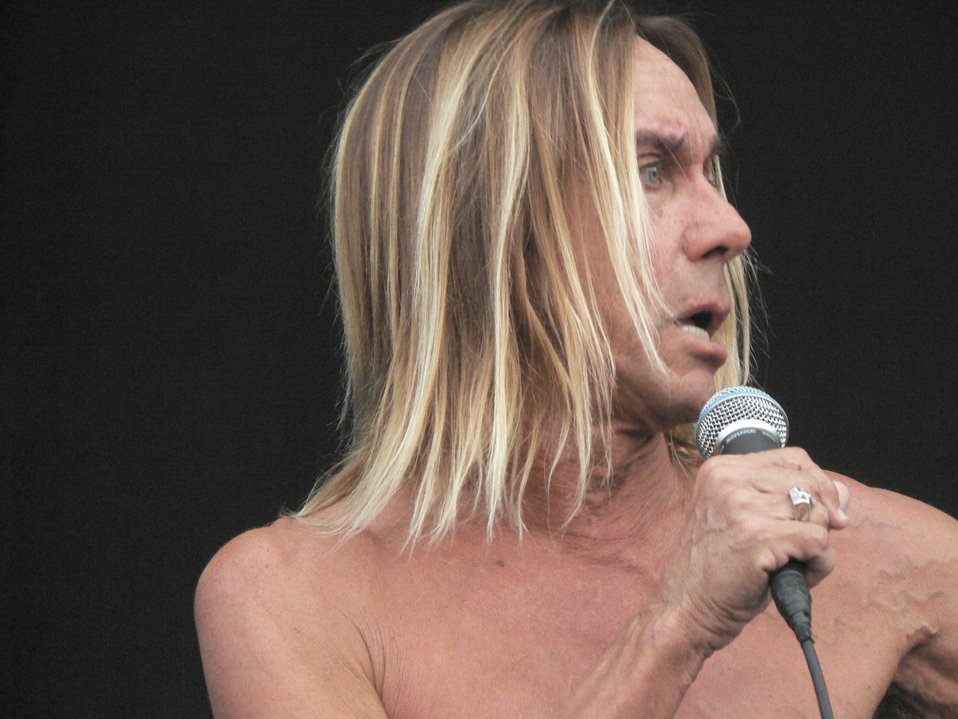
Sziget, Nagyszínpad, 2006 augusztus 15, 18 óra. A rocktörténelem egyik legnagyobb hatású együttese. A Stooges egyike a valóban legendás zenekaroknak, soha el nem évülő édes bűnökkel, máig érvényes munkássággal, fontos albumokkal, legendás koncertekkel és büntető slágerekkel. Az 1967-ben alakult zenekar (Iggy Pop - akkor még Iggy Stooges néven- , Ron Asheton, Scott Asheton és Dave Alexander) 1969-ben jelentette meg első albumát. A Stooges pszihodelikus, zsigeri gyökérrockos, garázsrockos, pre-punk zenéje millió zenekarra és irányzatra hatással volt a Sex Pistolstól a Gun”N and Rosesig, a Jane”s Addictiontól a Queens of Of The Stone Age-ig, a Red Hot Chili Pepperstől a Sonic Youthig. Eszünkbe juthatnak azonban a hazai előadók is: az URH, az Európa Kiadó vagy a Flash. Az 1947-es születésű Iggy Pop először 47 évesen koncertezett Magyarországon. Koncertet adott 2002-ben a Szigeten. 2004-ben egy ausztriai fesztiválon hajdani proto-punk együttesének, a legendás detroiti Stooges -nek a tagjai, az Asheton fivérek, a gitáros Ron és a dobos Scott, illetve Steve MacKay xaxofonos kísérték. (Az időközben elhunyt Dave Alexander basszista helyére egy másik punklegenda, Mike Watt ugrott be). Csak az 1969-es The Stooges és az 1970-es Fun House nagylemezek klasszikus dalait játszották, meg néhány új számot, amit a 2003-as újjáalakulás idején írtak Iggy Skull Ring albumára. Ha minden igaz, 2007-re egy komplett studiólemezt is felvesznek együtt és Elijah Wood főszereplésével mozifilm is készül Iggyről. Aki hatvanévesen is vadul ugrált és ordítozott a SZIGET Nagyszínpadán. A felvétel a színpad közepéhez vonalához közel, az első sorból készültek. A kép korábban Creativ Commons alatt megjelent a Metapolisz 6 DVD -n (ISBN: 963-06-0653-4).